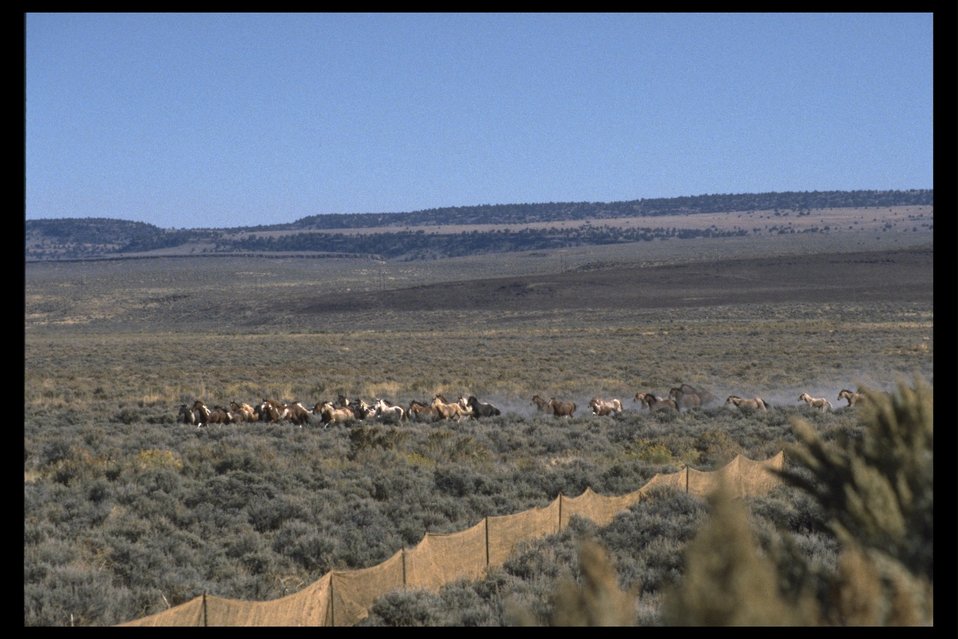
Wild horses at a trap in the South Steens Horse Management Area.